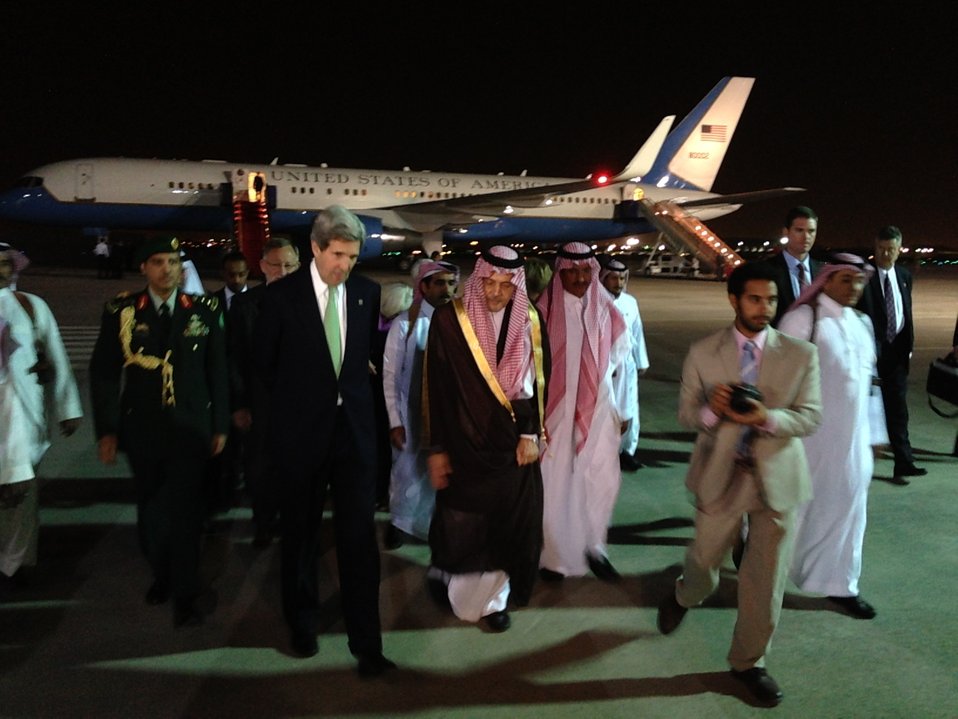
Secretary Kerry Arrives in Saudi Arabia

U.S. Secretary of State John Kerry walks with Saudi Arabian Foreign Minister Saud Al-Faisal upon his arrival to Riyadh, Saudi Arabia, on March 3, 2013.